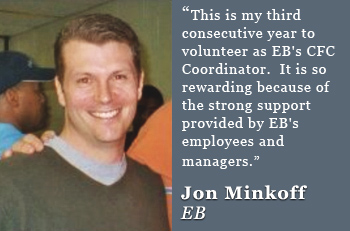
jonminkoff